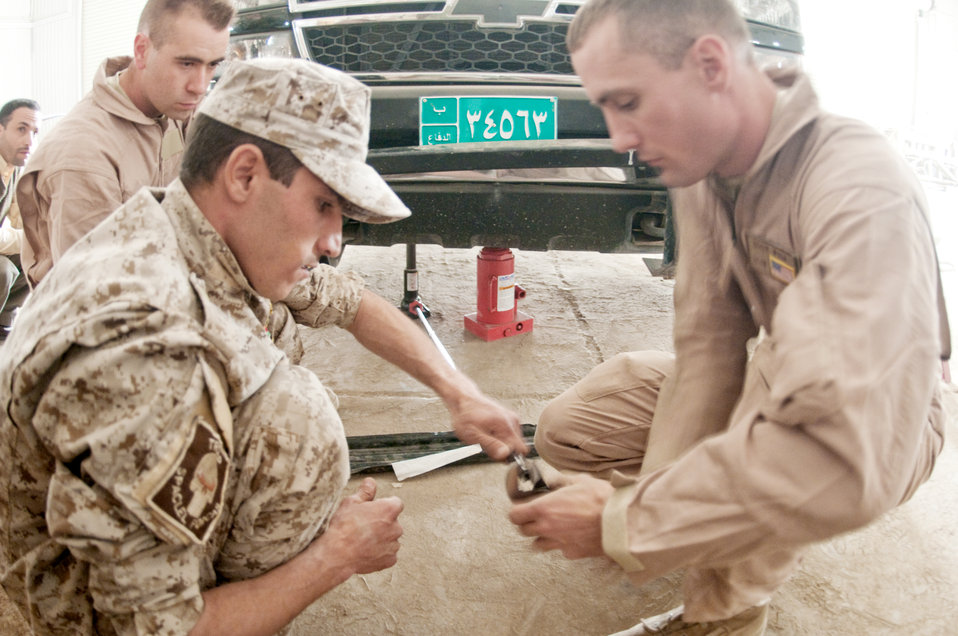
Coalition forces team up for vehicle training

Staff Sgt. Giles Fish helps Iraqi army members prepare to elevate a truck during a training course given by the Logistics Military Advisory Team Feb. 22, 2010, at Camp Ur, Iraq. Sergeant Fish is assigned to the 407th Expeditionary Logistics Readiness Squadron at Ali Base, Iraq. He is deployed from Little Rock Air Force Base, Ark.